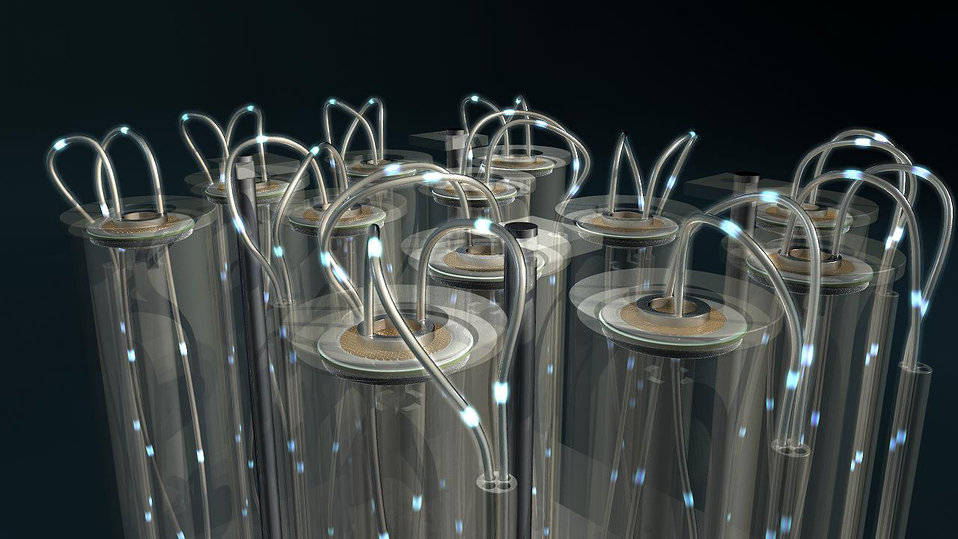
SHOWN IS A 3D RENDERING OF NATIONAL ENERGY TECHNOLOGY LABORATORY'S MULTI CELL ARRAY (MCA).